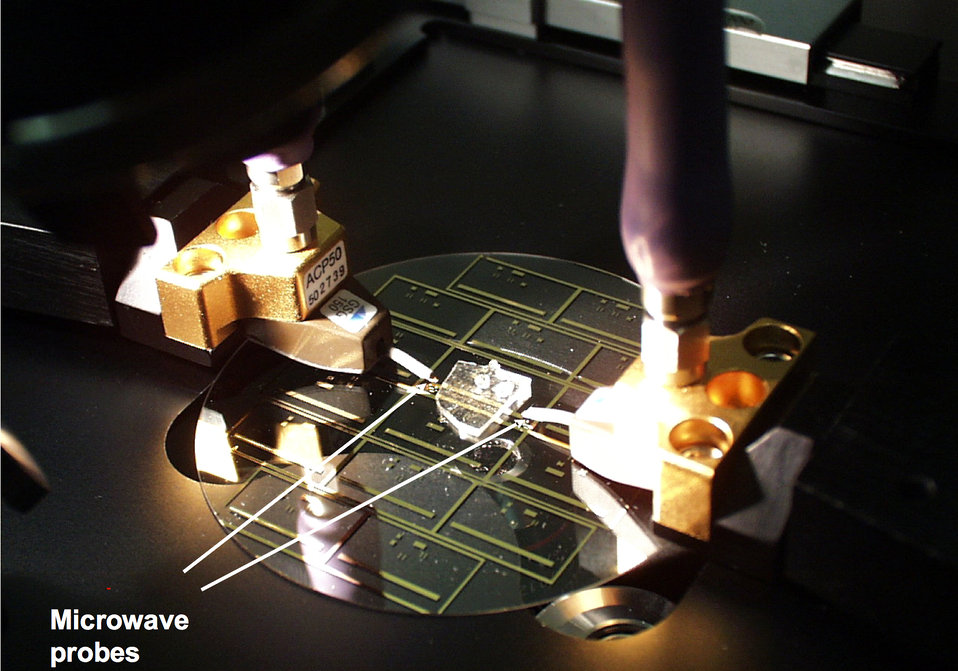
Lab-on-a-chip; Micro Microwave

Photograph of the NIST micro microwave oven. The gold traces on the glass circle are microwave transmission lines. The 1.25 cm wide polymer block over the transmission line in the center houses a miniature chamber in which a pinhead-sized drop of fluid is heated.